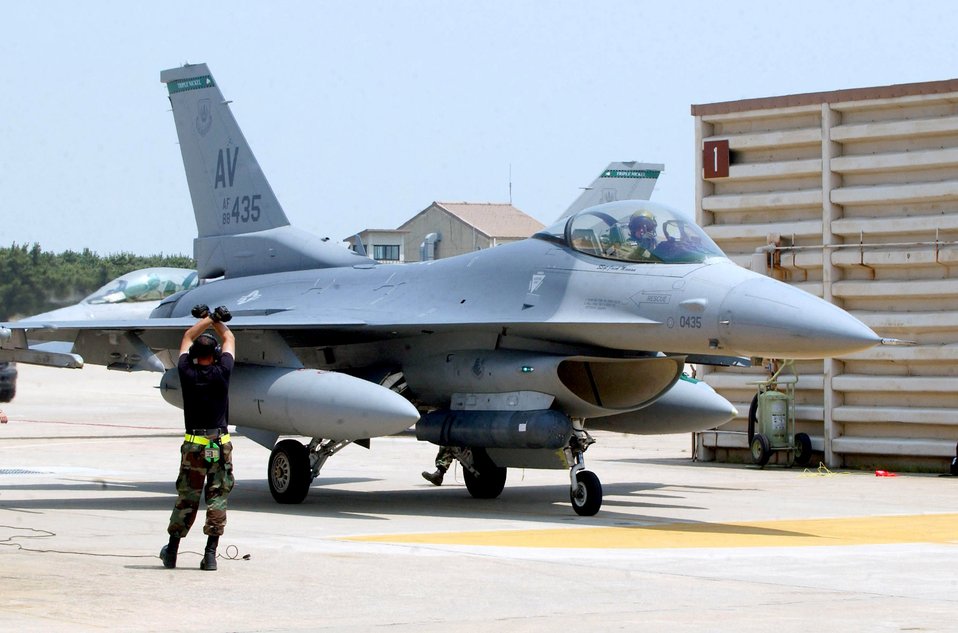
USAFE fighter squadron deploys to Kunsan

Lt. Col. Clay Hall pulls to a stop with the direction of his maintainers June 19 at Kunsan Air Base, South Korea. Colonel Hall and other pilots arrived to Kunsan AB from Aviano Air Base, Italy. This is the first time a U.S. Air Forces in Europe fighter unit has deployed to a Pacific Air Force base.